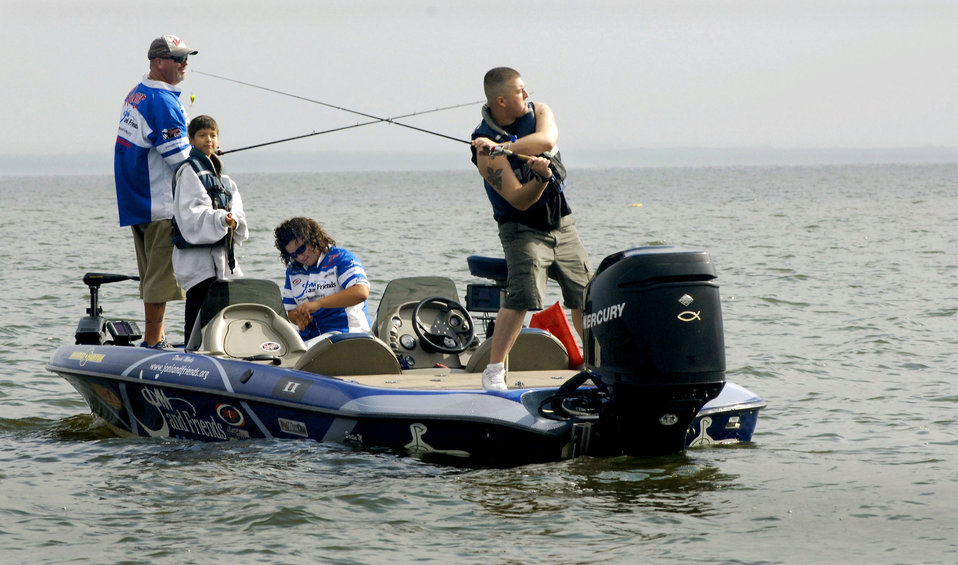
Injured servicemembers get away from hospital to fish

Army Sgt. Joseph Reyes, right, casts from the back of a bass boat Nov. 3, at Choke Canyon Reservoir, Texas, during the fourth annual Fishing For Freedom event held by the Quality Bass Club of San Antonio.